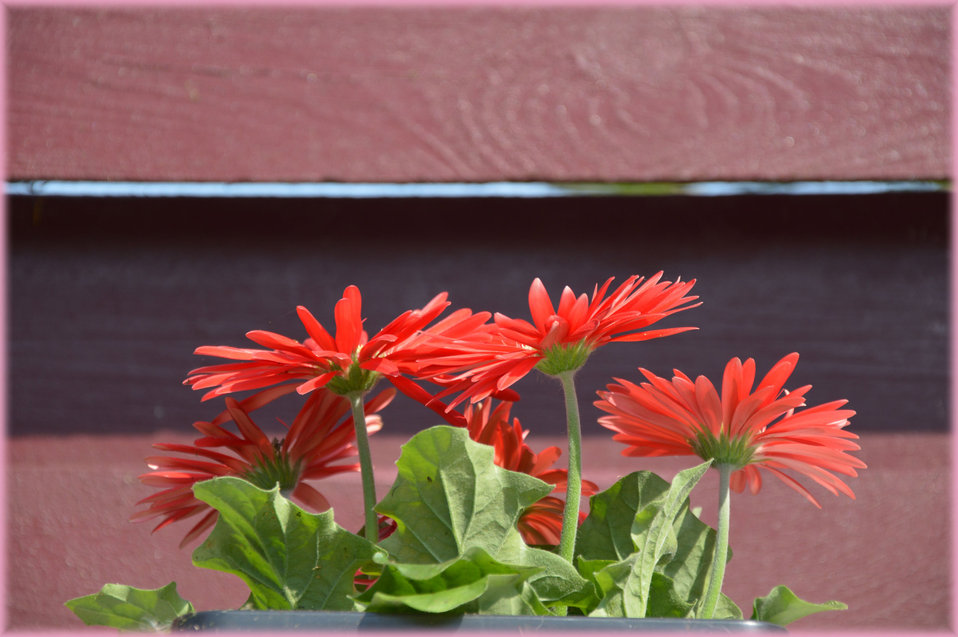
Floral

Ornate flowers.